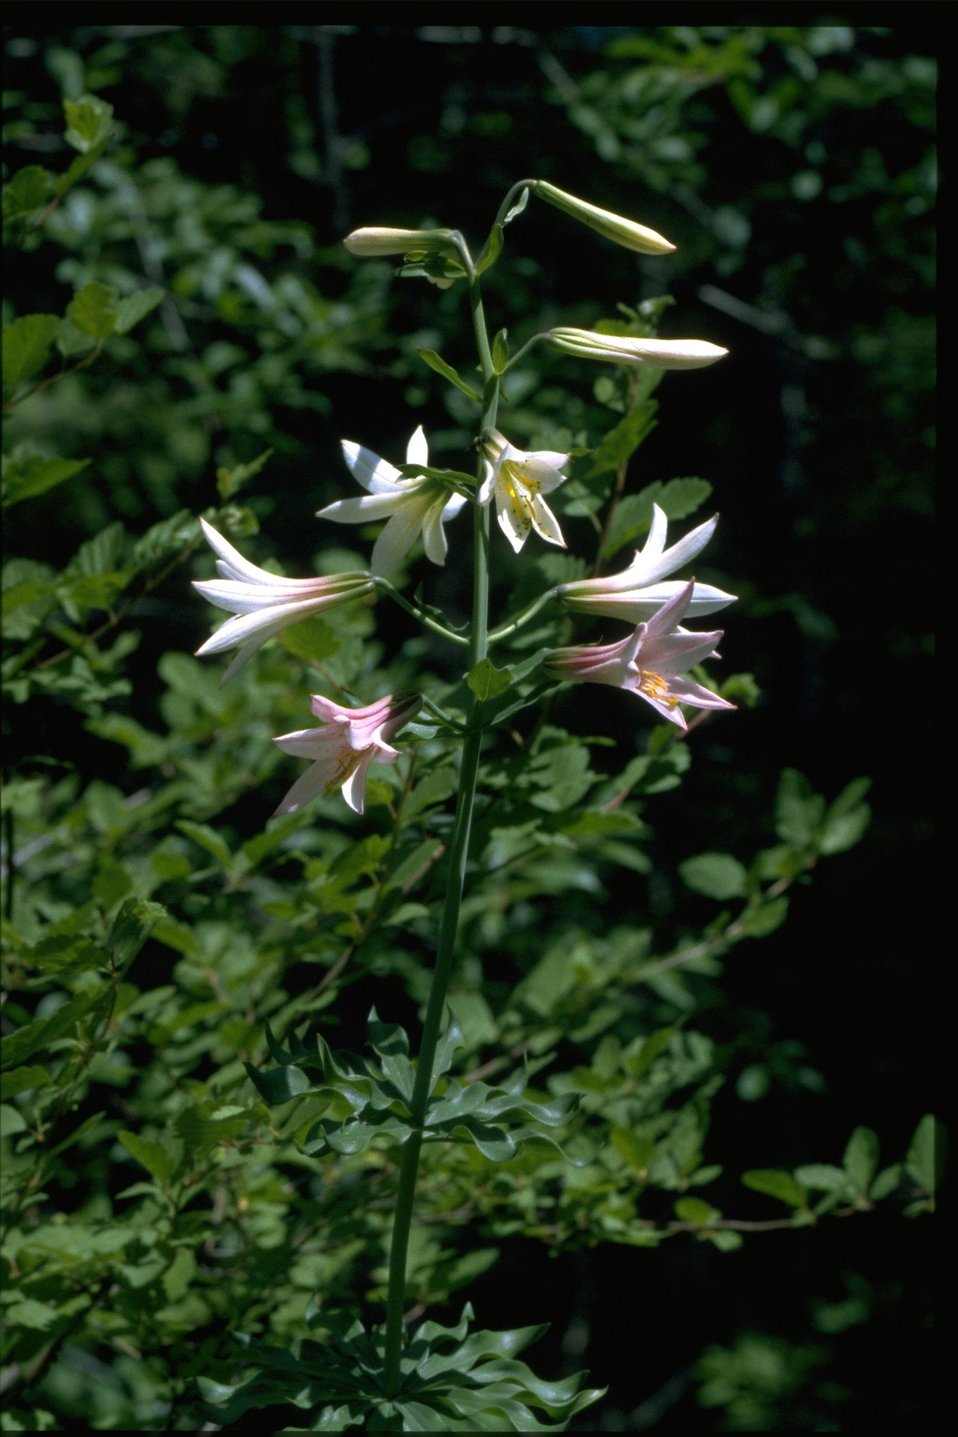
Medium shot of Lilium washingtonianum.